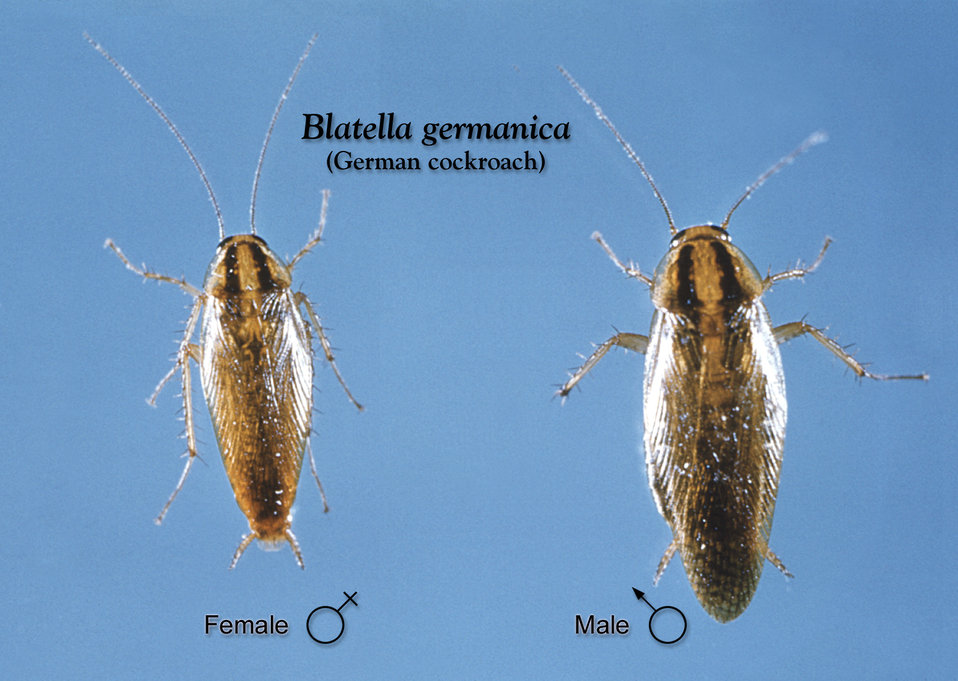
This image depicts a dorsal view of a female (Lt), and a male (Rt) German cockroach, Blatella germanica.